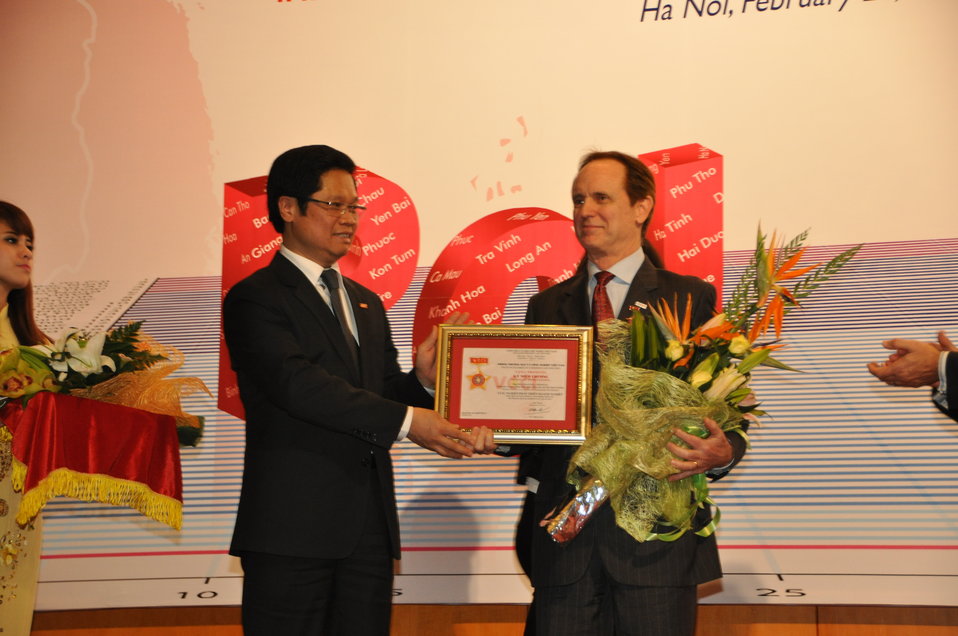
USAID Mission Director Francis Donovan receives award from VCCI Chairman Vu Tien Loc at the Provincial Competitiveness Index 2011 Launch